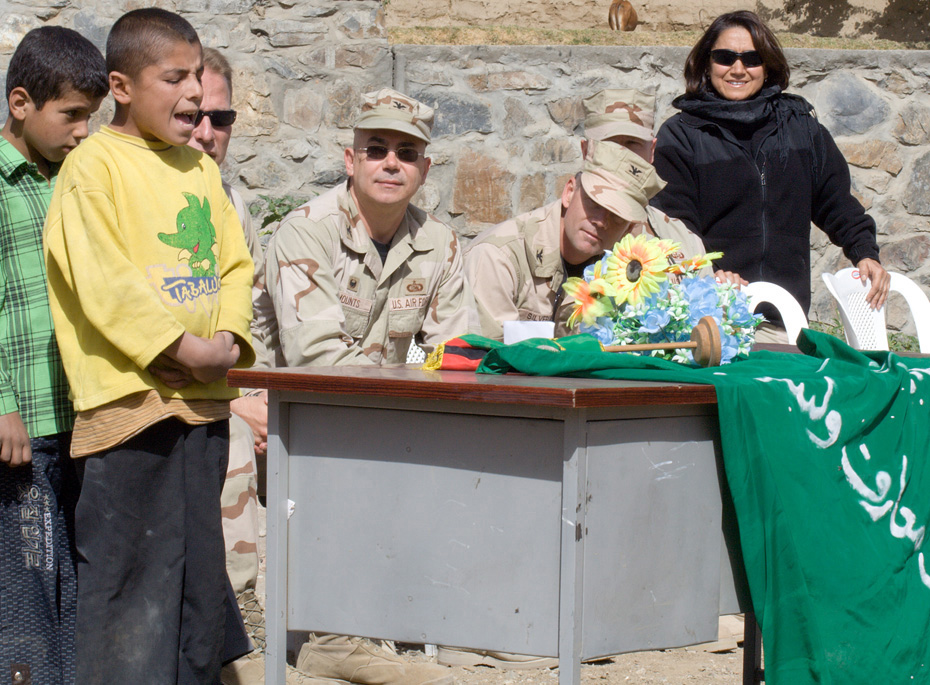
Reconstruction team dedicates water well

Lt. Col. Neal Kringel, Panjshir Provincial Reconstruction Team commander; Col. Michael Mounts, 755th Expeditionary Mission Support Group commander; Col. Jay Silveria, 455th Air Expeditionary Wing vice commander; Chief Master Sgt. David Williamson, 455th AEW command chief; and Ms. Shahla Hammond, Panjshir PRT interpreter, listen as the top student at Rohka School sings the Afghan national anthem at the school's water well dedication ceremony Oct. 21.